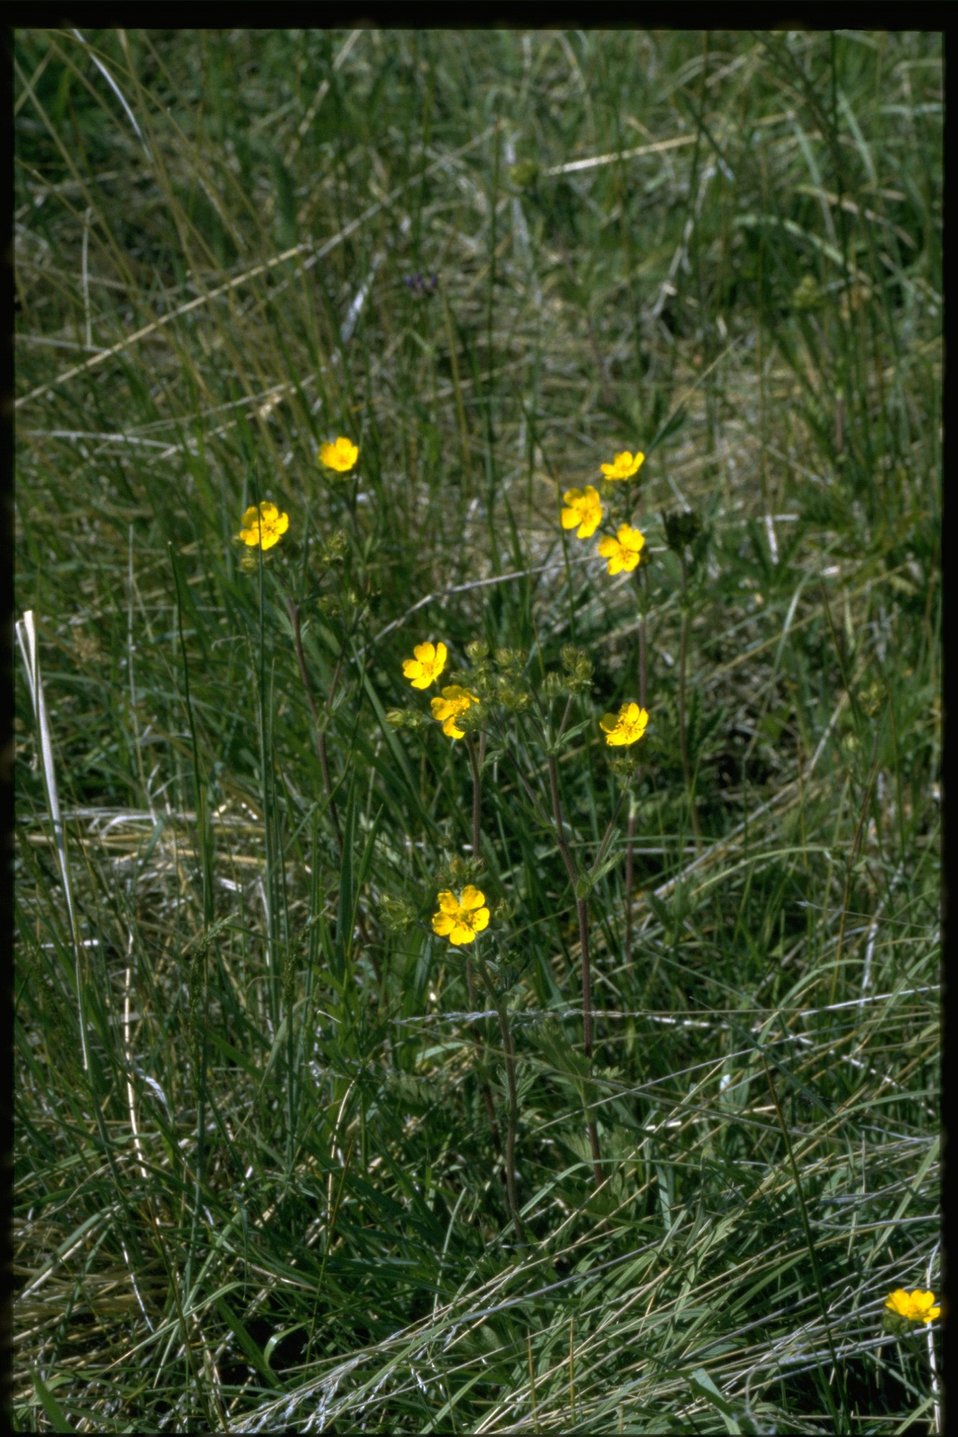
Farshot of Phlox habitat.